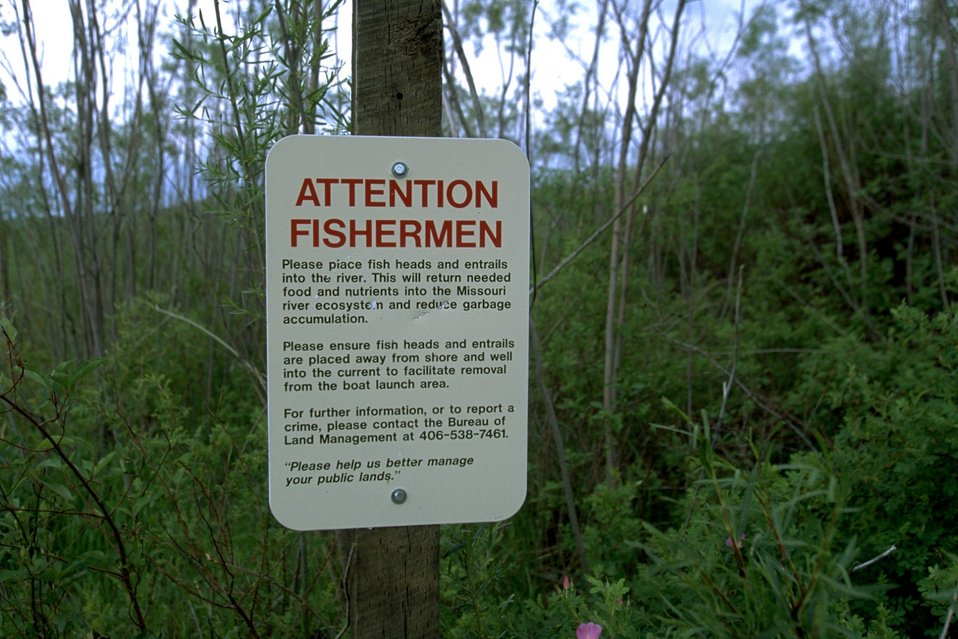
BLM Information Sign at Kipp Recreation Site